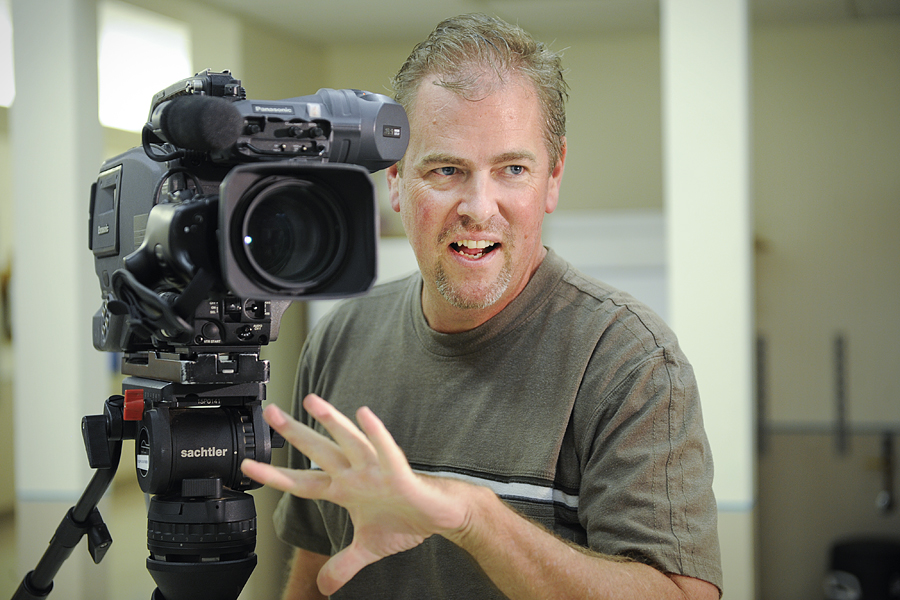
Holiday greets team

Scott Williams sets up a holiday greetings shot Sept. 7, 2010, during a practice session at the Defense Media Activity – San Antonio headquarters. Mr. Williams, a broadcast specialist with the Joint Hometown News Service, is a member of the European greetings team.